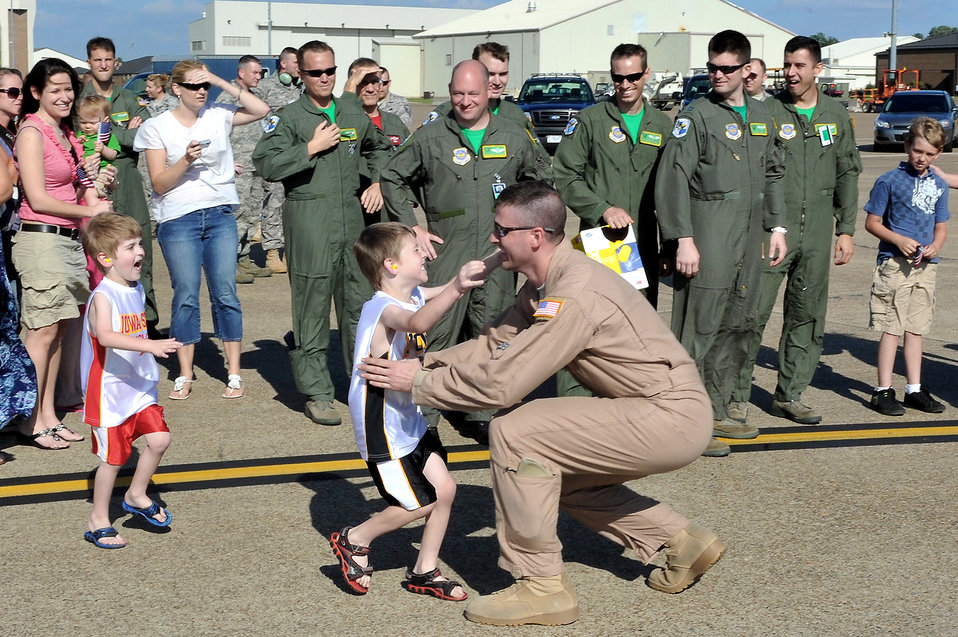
Returning home

Tech. Sgt. David Hendrickson is greeted by his sons, Aiden and Karsten, May 13, 2001, at Little Rock Air Force Base, Ark. Sergeant Hendrickson is assigned to the 61st Airlift Squadron.